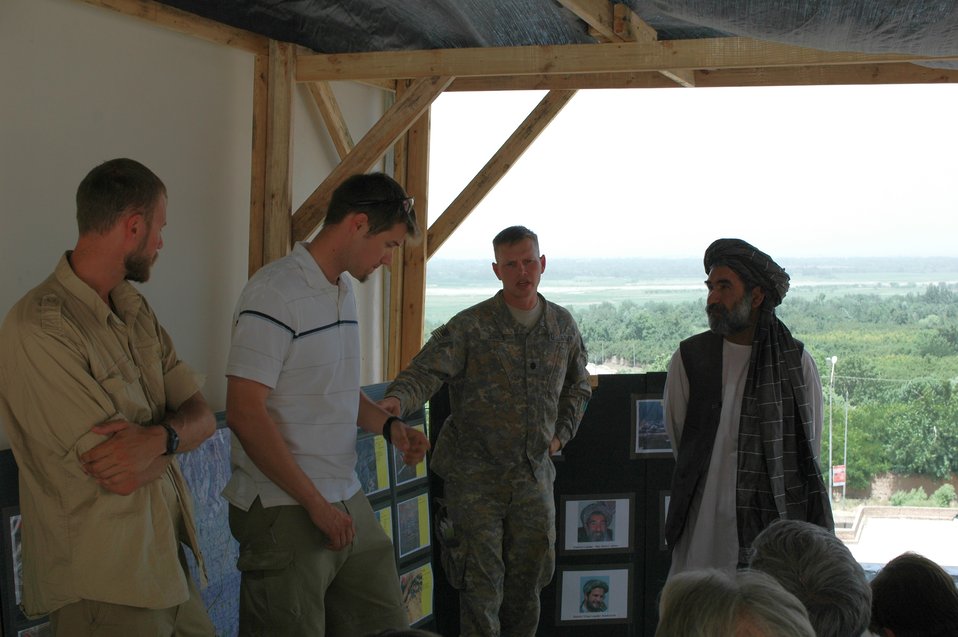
CODEL Berman